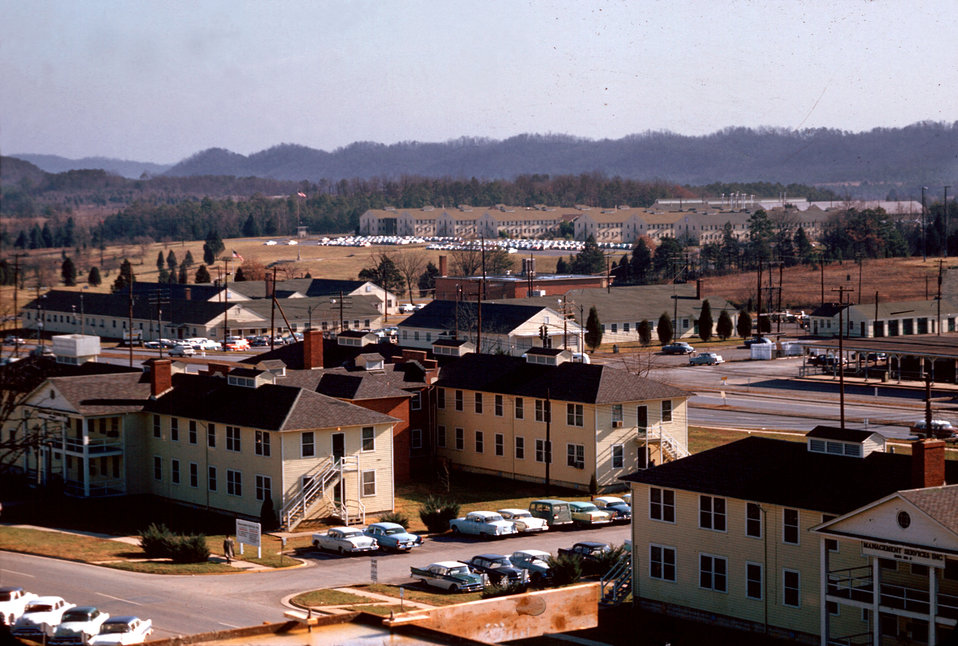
Oak Ridge 1959

DOE photo by Ed Westcott Oak Ridge Tennessee 1959